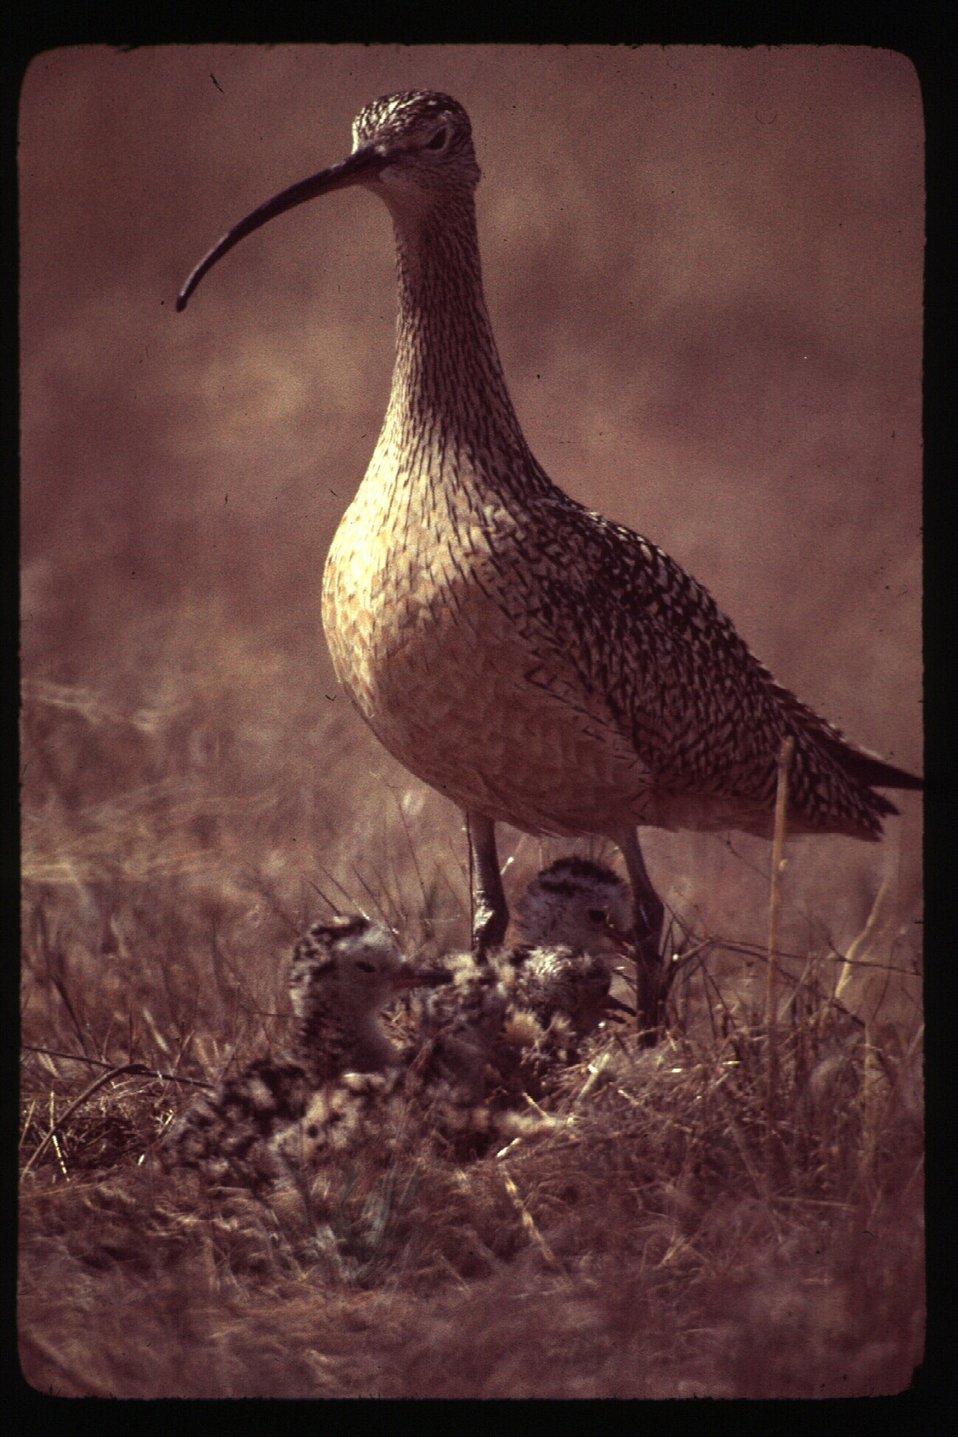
Curlew Wildlife birds LSRD Lower Snake River District